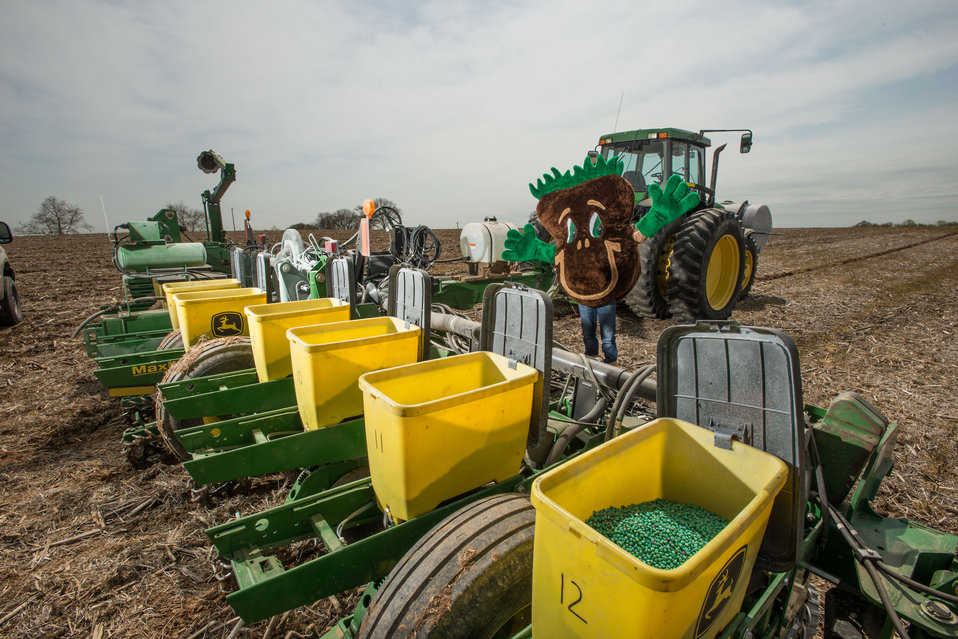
The U.S. Department of Agriculture’s (USDA) Natural Resources Conservation Service (NRCS) mascot Sammy Soil on the Sunny Ridge Farm in Laytonsville, MD on Monday, Apr. 28, 2014. The Sunny Ridge Farm owned by the Stabler family uses a number of conservation practices to promote soil health and water quality. No-till cropping systems use cover crops that help water soak deep into the soil and machines work lightly on top of the soil preserving vertical pores that are water’s pipeline to the roots. Cover crops prevent erosion, improve soil health, hold water, supply nutrients, and suppress weeds and pests. Fenced waterways keep livestock away from the streams and drainage to low points of fields, which allows grass, trees and other vegetation to grow. The plants take up nutrients from the livestock effluent, reducing pollution to waterways. The farm also has a well-designed agrichemical facility for an environmentally safe area to handle and store tanks of on-farm chemicals.